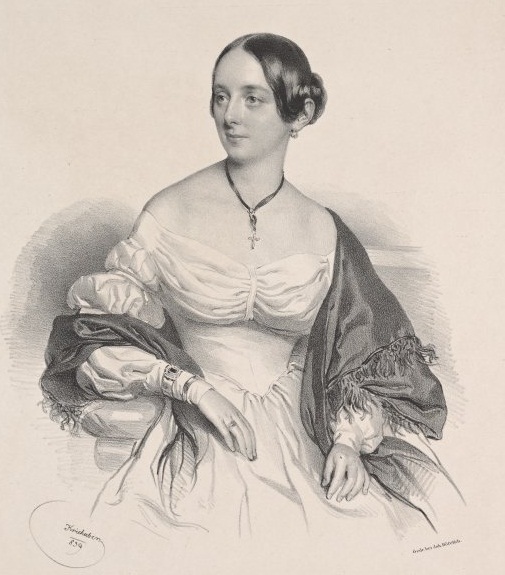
Adelina Spech-Salvi